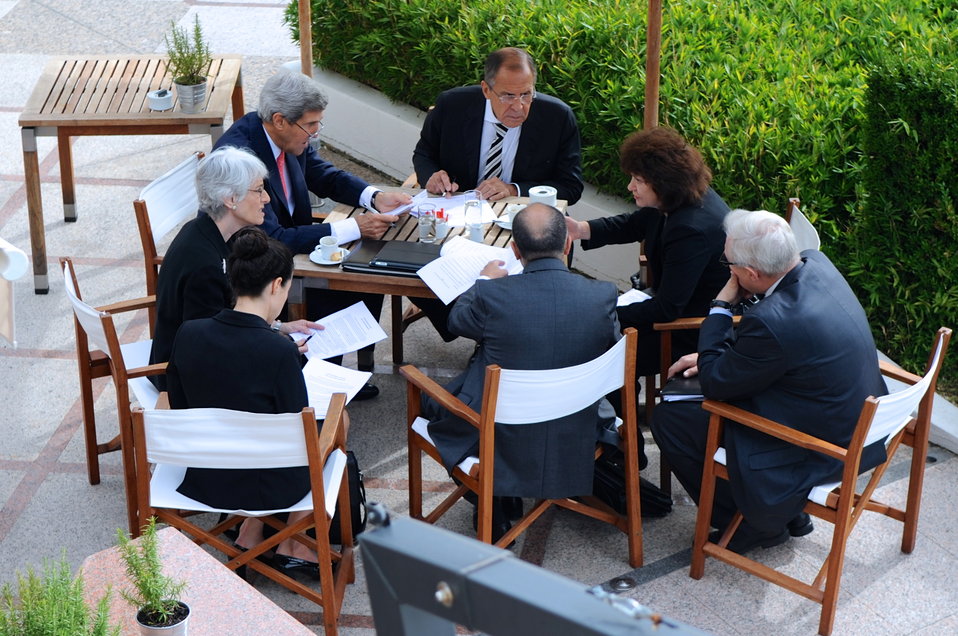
Secretary Kerry, Russian Foreign Minister Lavrov Hold Final Syria Negotiating Session

10:53 a.m., September 14, 2013 - U.S. Secretary of State John Kerry, his Russian counterpart, Foreign Minister Sergey Lavrov, and their senior advisers meet on the pool deck of the Hotel Intercontinental in Geneva, Switzerland, during their final negotiating session over an agreement to eliminate Syrian chemical weapons.